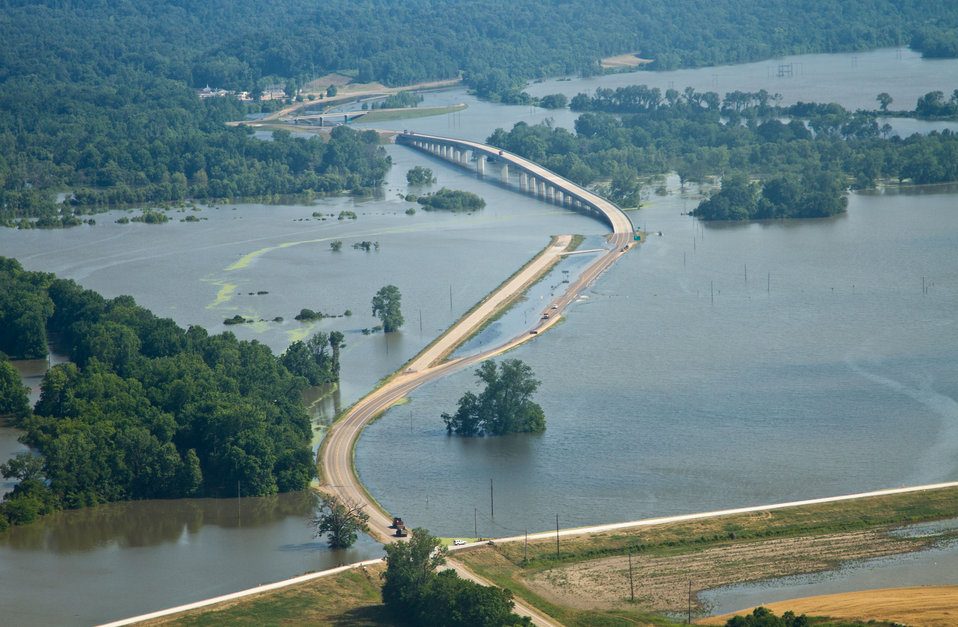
Aerial view of flooding of the Mississippi River, on Thursday, May 19, 2011 photographed from the MS side.